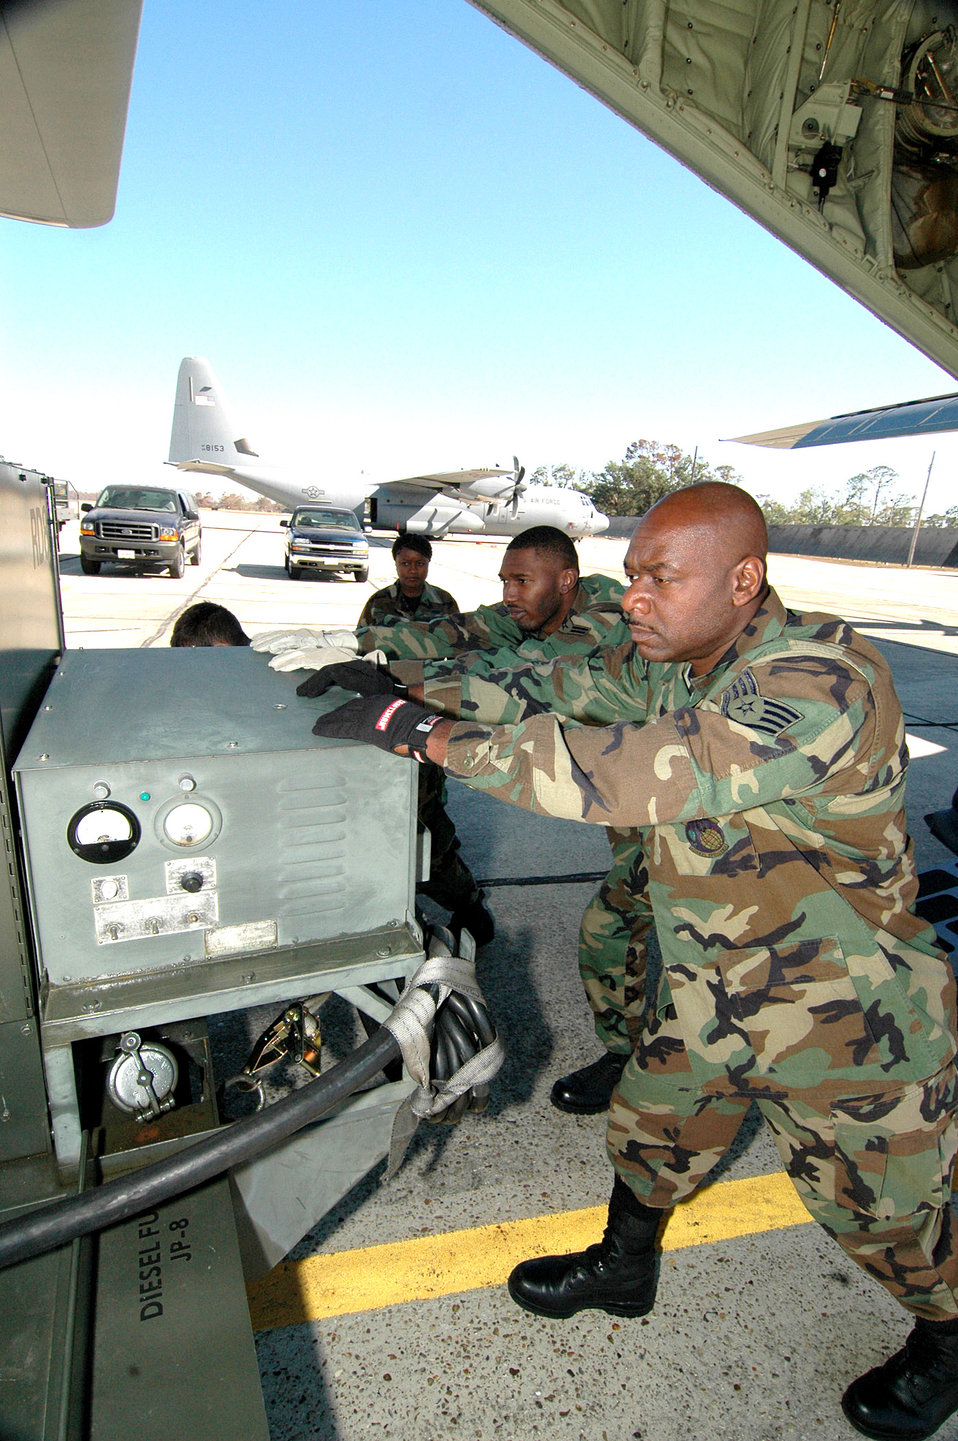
Back home

KEESLER AIR FORCE BASE, Miss. (AFPN) -- Reservists from the 41st Aerial Port unload a 5,000 pound generator from a C-130J Hercules. The aircraft returned home after flying missions out of Dobbins Air Reserve Base, Ga., since Hurricane Katrina bashed apart its home base. The 403rd Wing mission, which includes the 53rd Weather Reconnaissance Squadron's